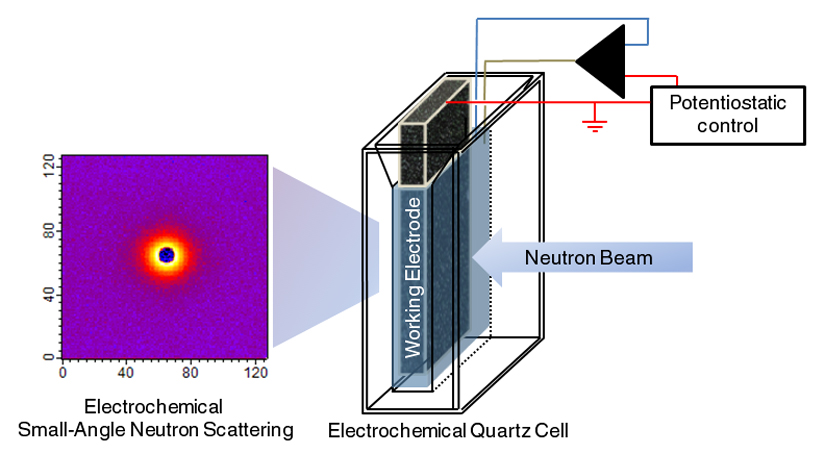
eSANS

Schematic of NIST's 'eSANS' (electrochemical Small-Angle Neutron Scattering) cell. A highly porous, sponge-like carbon electrode maximizes surface area for electrochemical reactions while structural details like particle size and configuration are measured using neutron scattering (image at left).